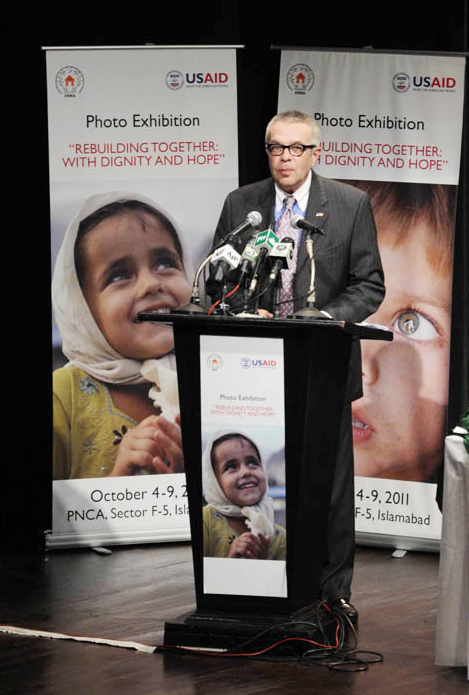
Photography and Drawing Exhibition on Pakistan 2005 Earthquake “Rebuilding Together: With Dignity and Hope”

Ambassador Richard Hoagland, Deputy Chief of Mission at U.S. Embassy Islamabad speaking at a photo exhibition 'Rebuilding Together: With Dignity and Hope' sponsored by USAID at Pakistan National Council of Arts (PNCA) in Islamabad.